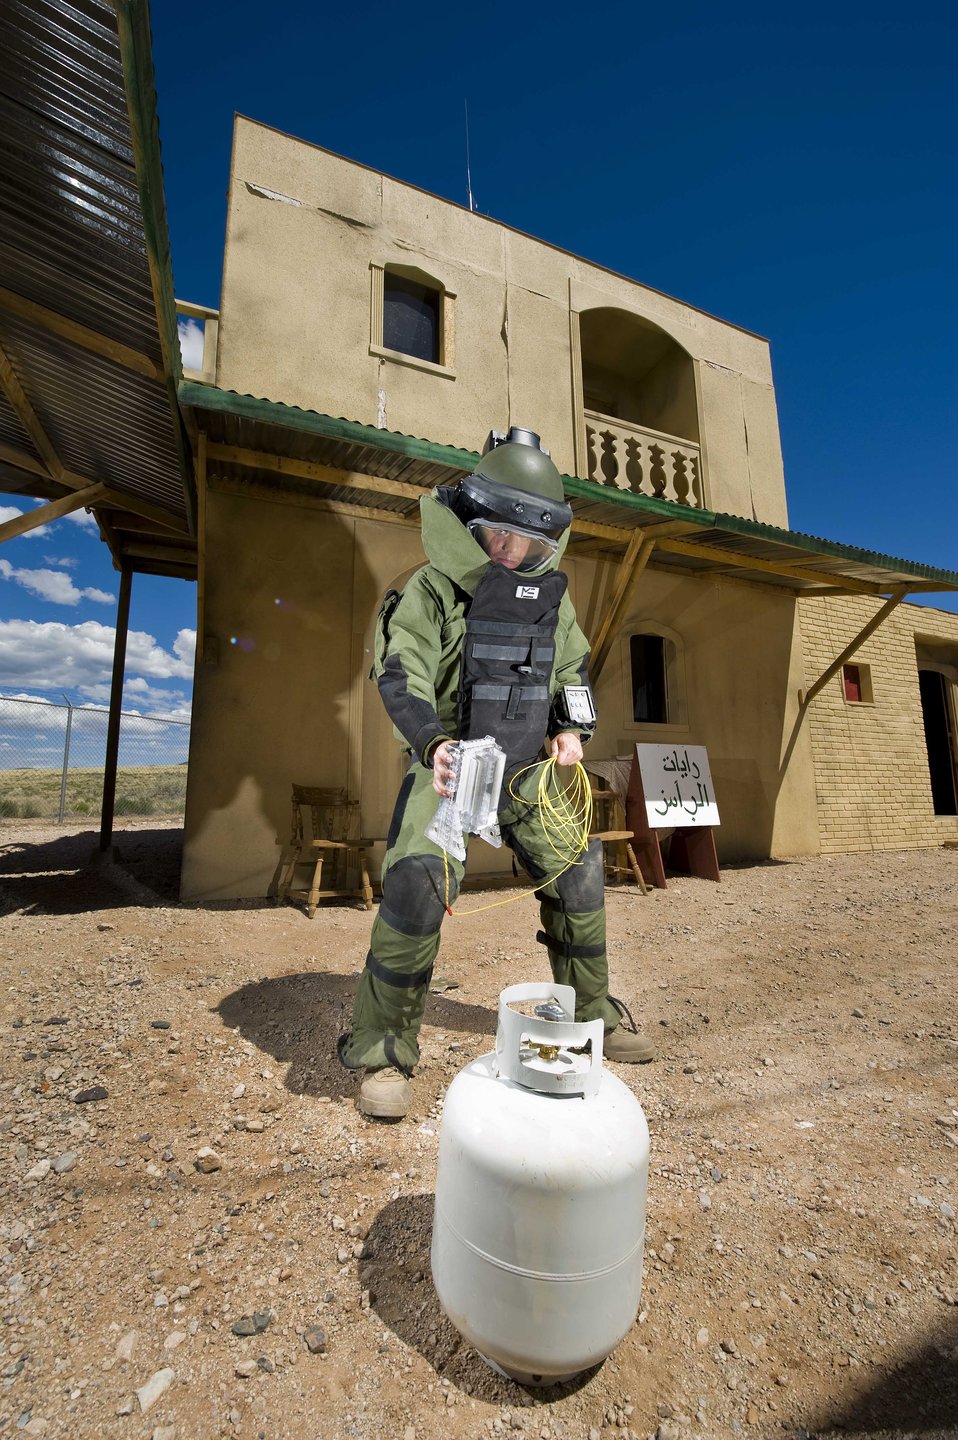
Shown is Sandia demonstrates the placement of a water disruptor.
The water disruptor device developed by Sandia researchers shoots a blade of water capable of penetrating steel. The device is headed to US troops in Afghanistan to help them disable deadly improvised explosive devices, or IEDs - the no. 1 killer and threat to troops in Afghanistan.